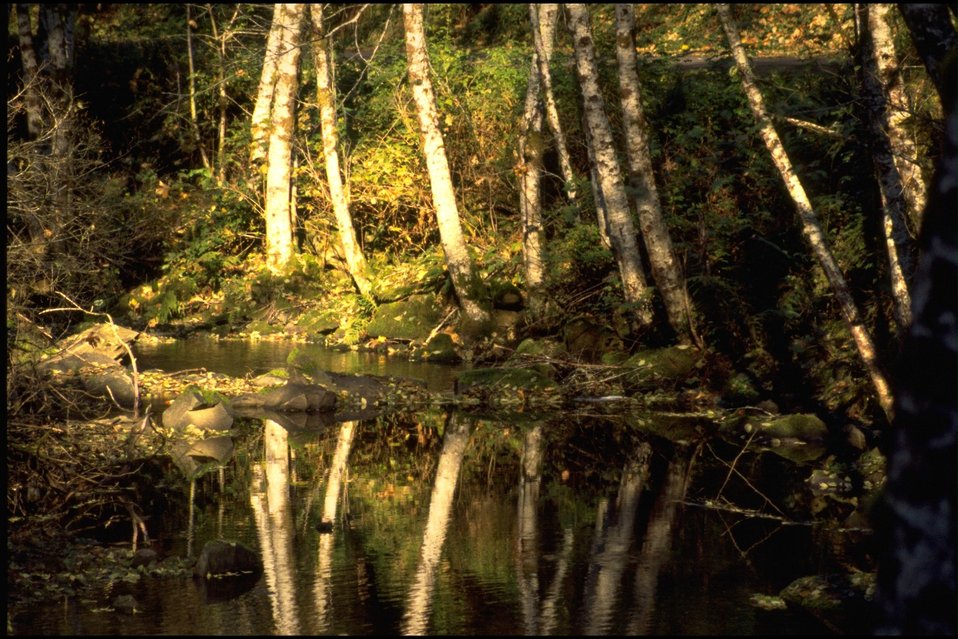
Scenic view on Whittaker Creek.